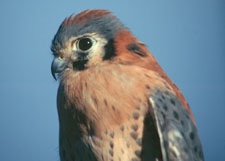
Birds of Prey American Kestrel Birds Wildlife